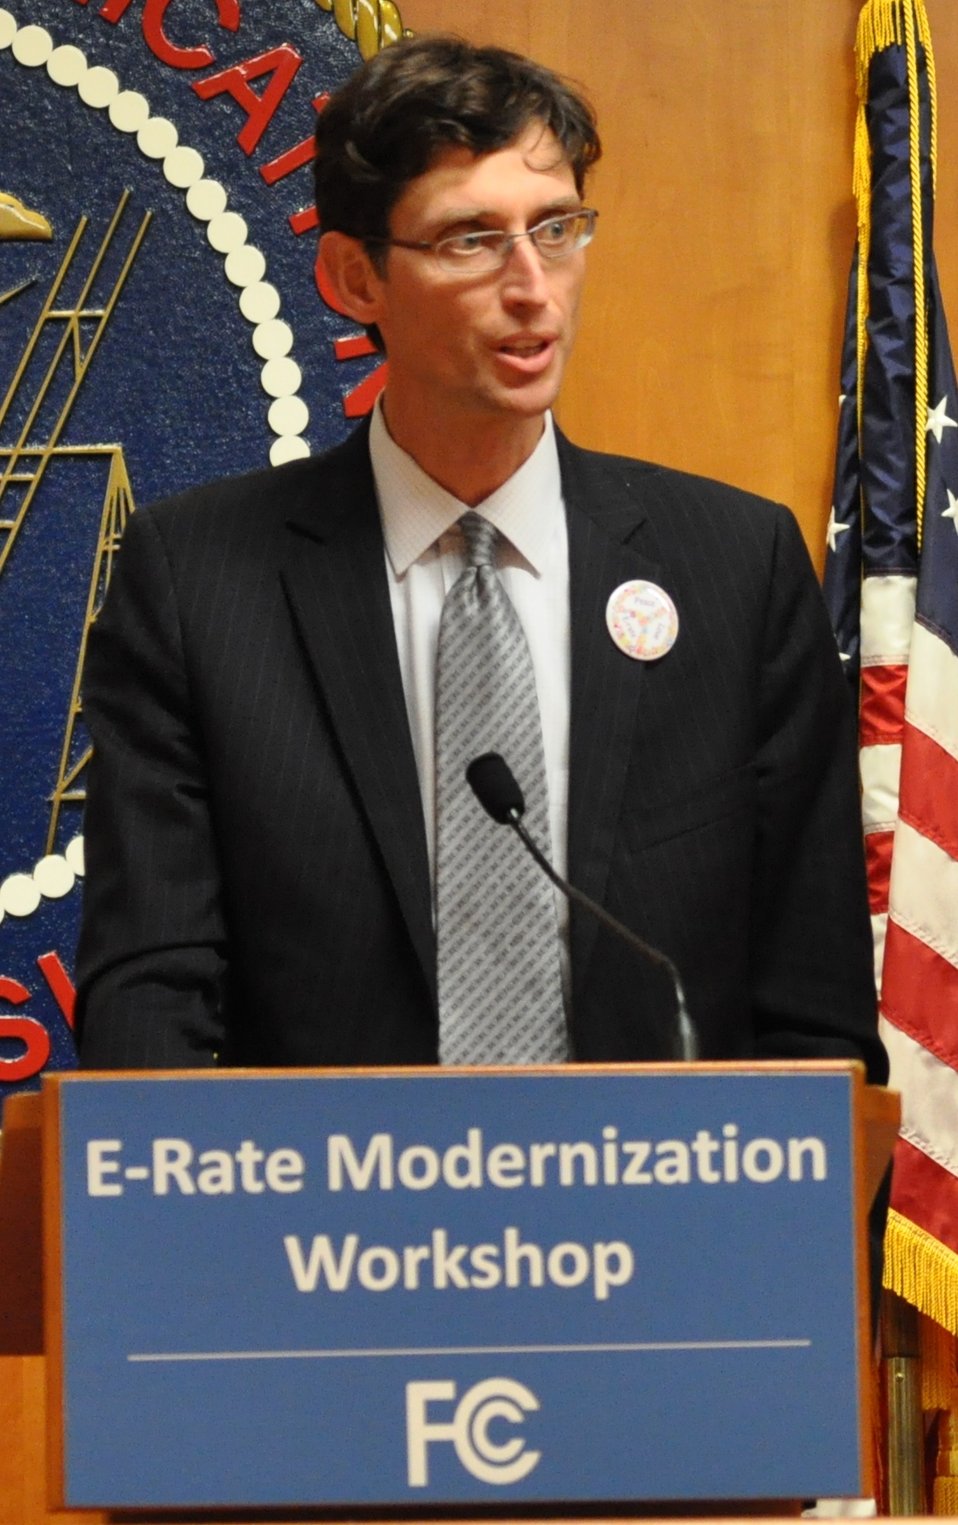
5.6.2014 E-Rate Modernization Workshop

Concluding Remarks from Jon Wilkins, Managing Director, FCC